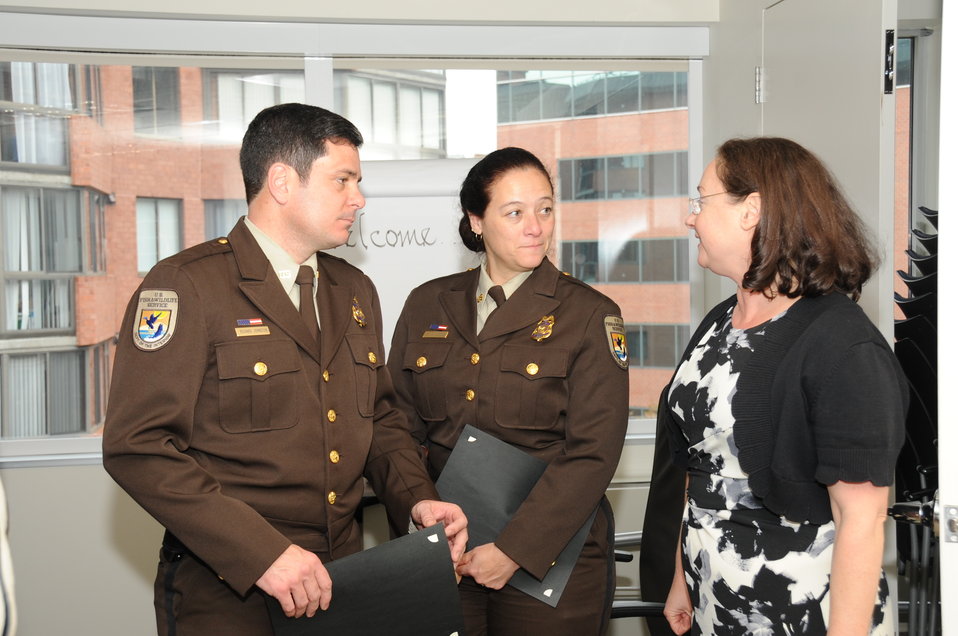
Honoring and Celebrating our Veterans

11.07.2012 Employees gathered in the Arlington Office to honor FWS Veterans